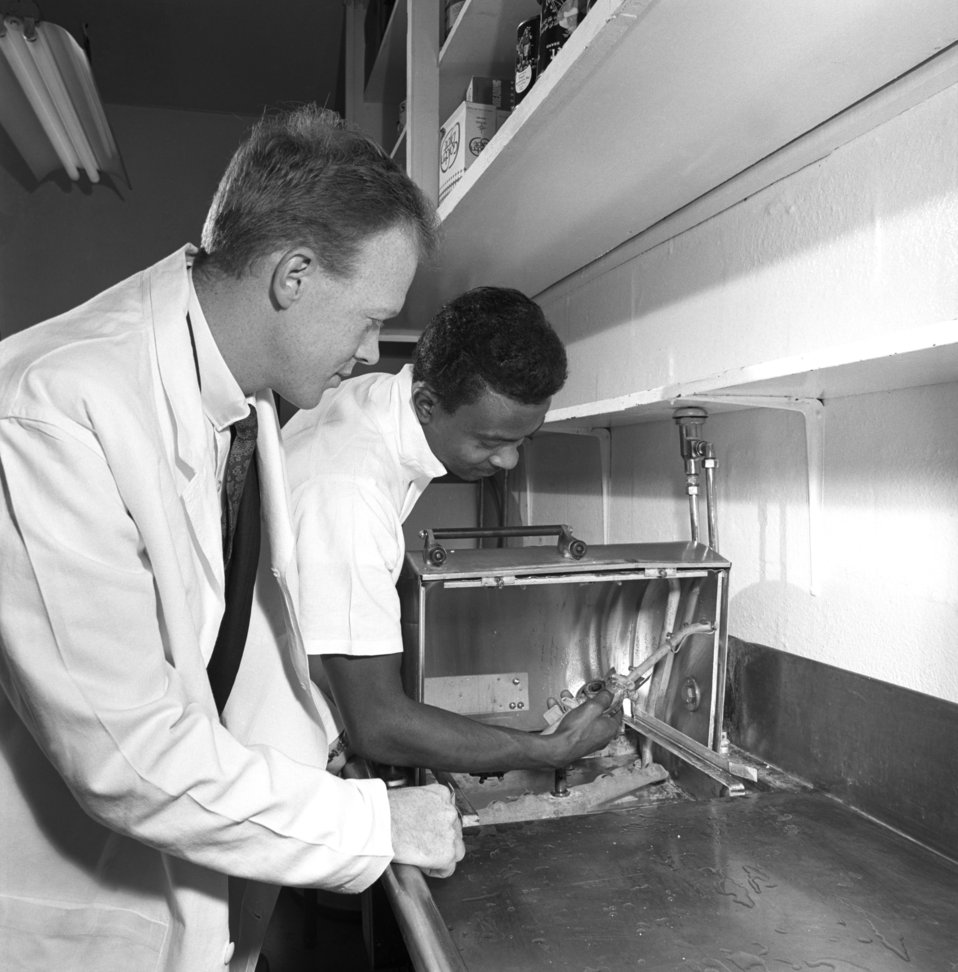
Dish Washers Oak Ridge 1968

68-579b DOE photo Frank Hoffman 10-1968 Oak Ridge Tennessee